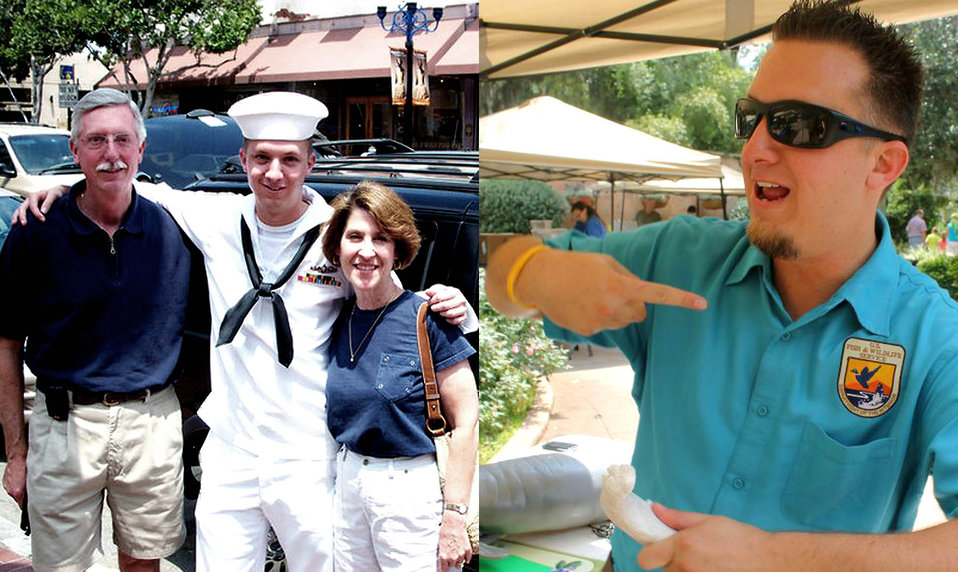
Josh Foster.
Josh Foster entered the U.S. Navy in May 2000. During his military career he was stationed in Illinois, California, Virginia, Florida and Mississippi. Josh served on three deployments to the Persian Gulf during Operation Enduring Freedom and Iraqi Freedom. After five years of military service Josh was medically retired from service in November 2005 as an Information Technology Specialist (E5)..
Josh reentered the public service in August 2008 as a Computer Assistant with the North Florida Field Office and would go on to become the office IT Specialist..
Foster was awarded the Navy/Marine Corps Achievements Medal and Navy Good Conduct Ribbon. He has been recognized for several meritorious achievement awards while working for FWS.